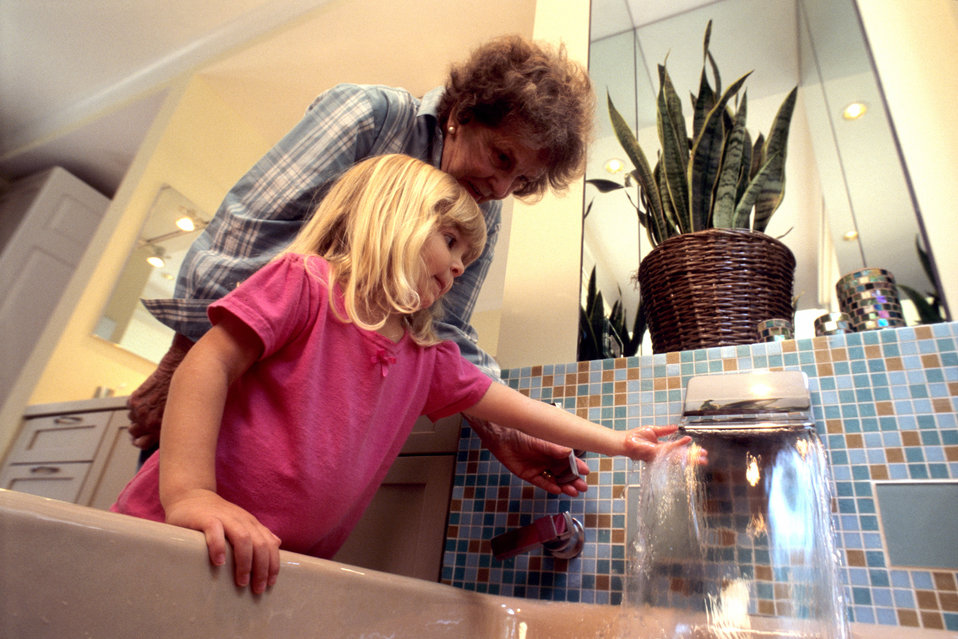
This was one of three images (PHIL# 9192 - 9194), depicting the usage of a bathtub's offset faucets. In this particular image, both a child and an elderly woman were standing next to the tub using the faucet, thereby, adjusting the temperature of the flowing water. Note that the faucet was installed closer to the outside of the tub for easy access. This faucet design enabled everyone to reach it more easily, including users who were standing, children, and the mobility-challenged, who were limited in their ability to bend and reach.